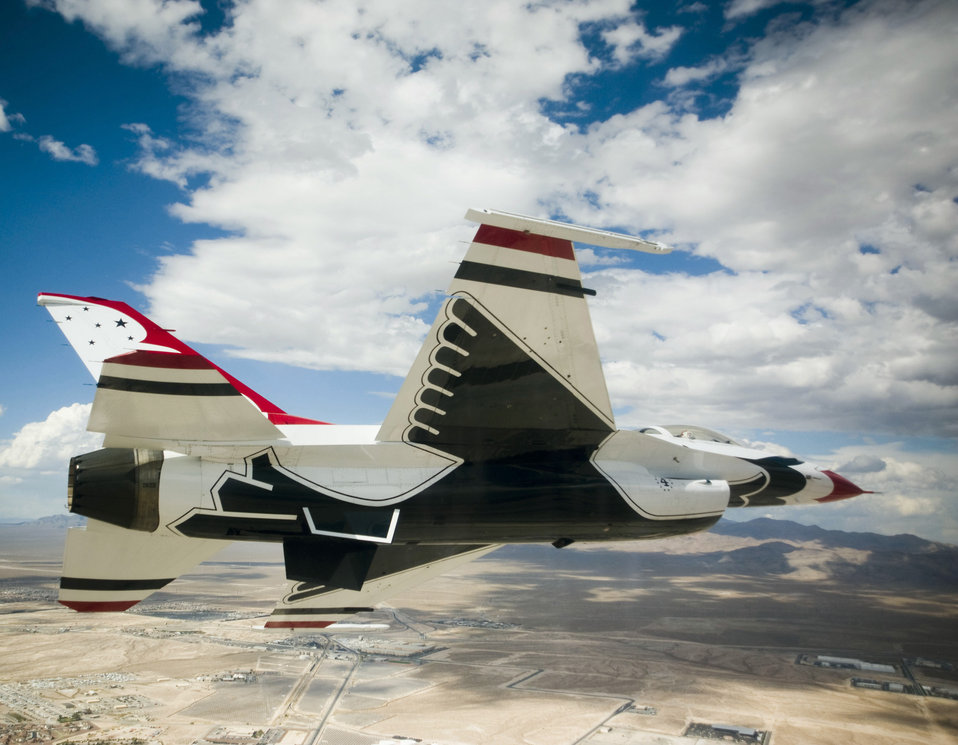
Thunderbirds announce 2012 officer selections

Five pilots have been selected to join the U.S. Air Force Air Demonstration Squadron, the Thunderbirds, for the 2012 demonstration season.